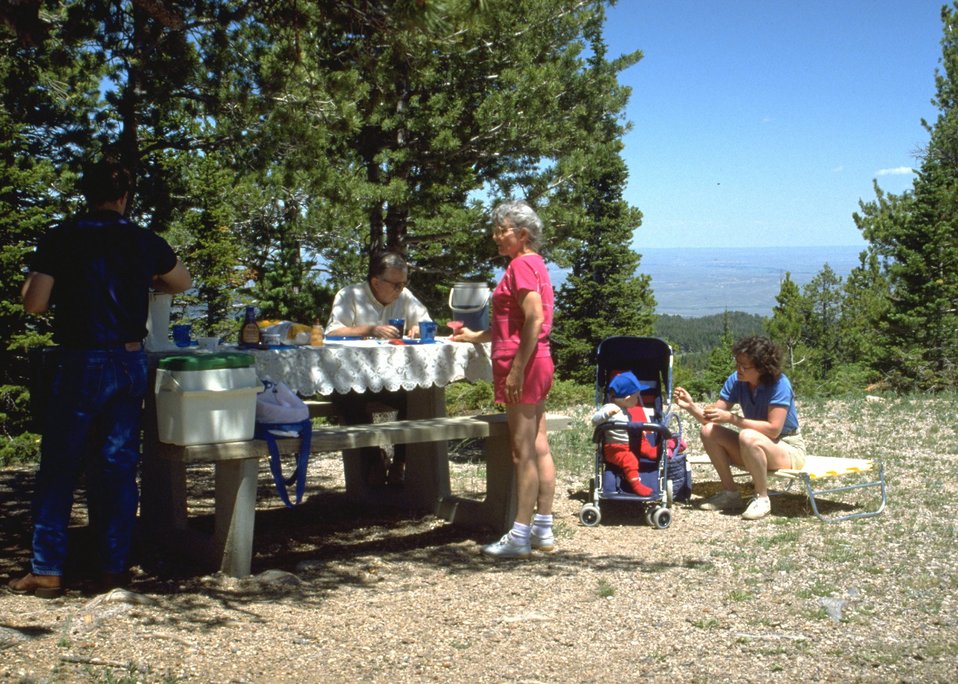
Enjoying an afternoon picnic.